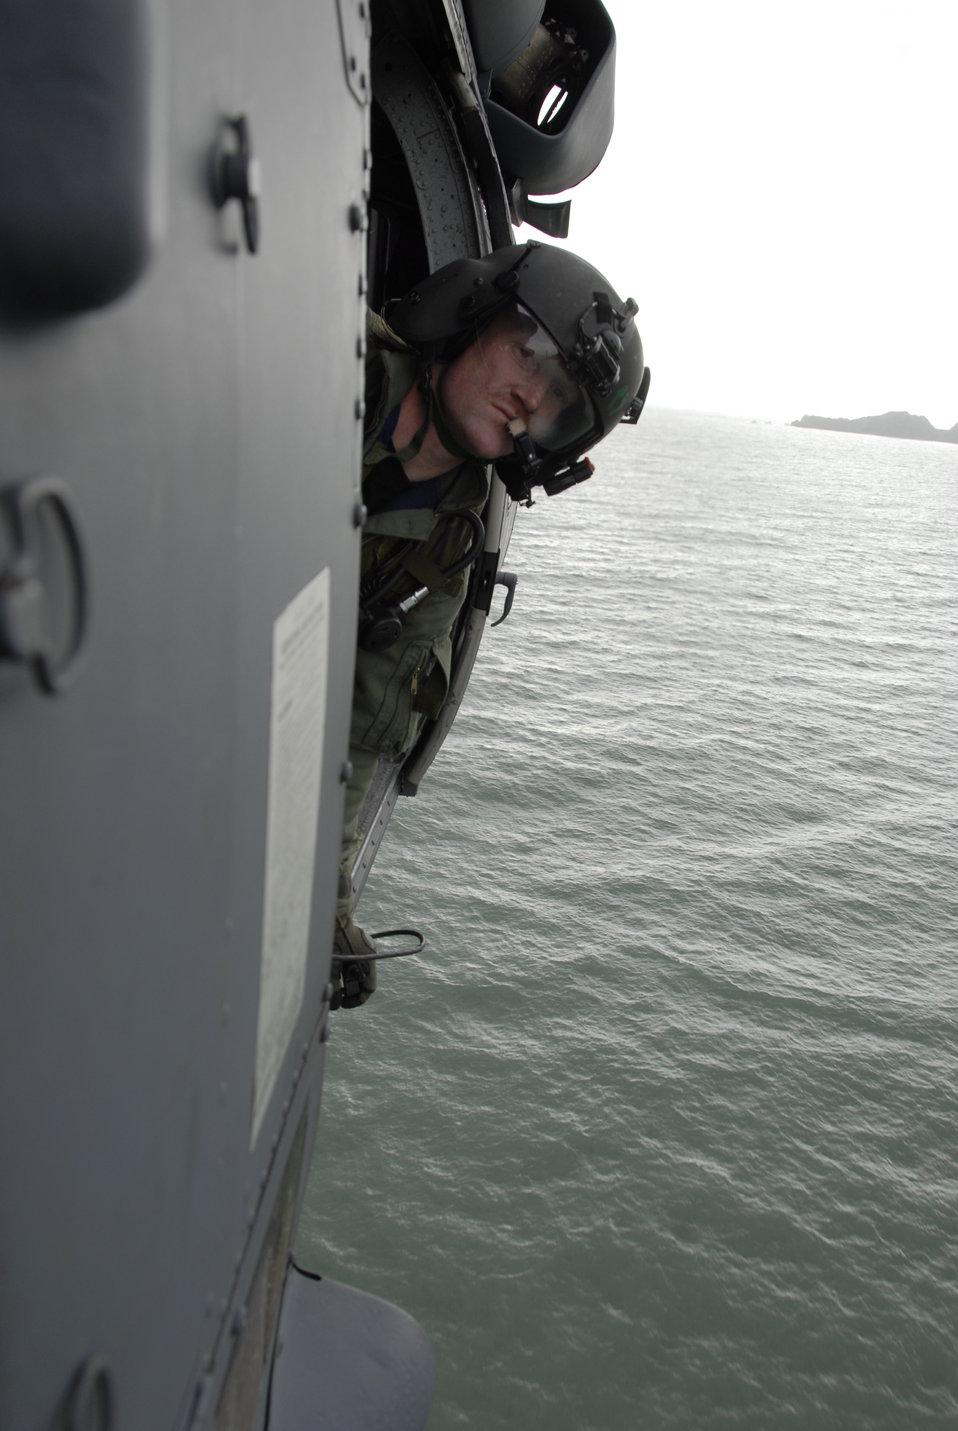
FARALLONS BATTERY MISSION

Staff Sgt. Joseph Kenney serves as a spotter to maintain flight safety as his HH-60G Pave Hawk helicopter prepares to land Feb. 17 on a helipad on the Farallon Island, which sits some 30 miles west of San Francisco. The helicopter and its crew, from the California Air National Guard's 129th Rescue Wing at Moffett Federal Airfield, Calif., are supporting the U.S. Fish and Wildlife Service by helping transport new photovoltaic batteries to power a lighthouse and workshop at the FWS research facility on the island. Sergeant Kenny is an HH-60G flight engineer with the 129th RQW.